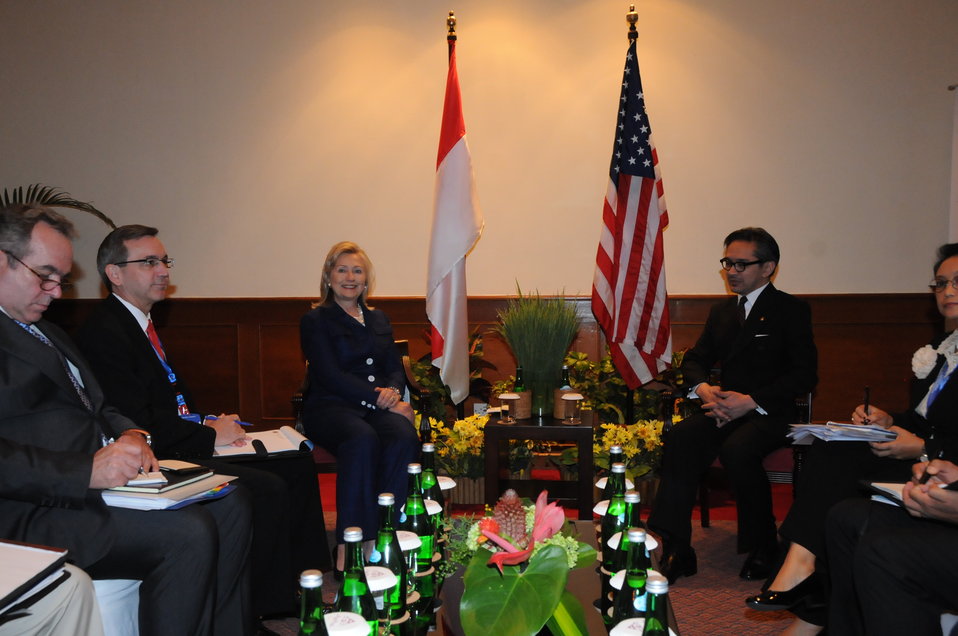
Secretary Clinton Is Greeted By Indonesian Foreign Minister Natalegawa

U.S. Secretary of State Hillary Rodham Clinton meets with Indonesian Foreign Minister Natalegawa to discuss bilateral issues in Bali, Indonesia, on July 24, 2011. Also participating in the meeting, pictured on the left side, are: U.S. Assistant Secretary of State for East Asian and Pacific Affairs Kurt Campbell and U.S. Ambassador to Indonesia Scot Marciel. Participating in the meeting, pictured on the right side from right to left, are: Indonesian Ambassador to the U.S. Dino Patti Djalal and Indonesian Foreign Ministry’s Director General for Europe and America Retno Marsudi.